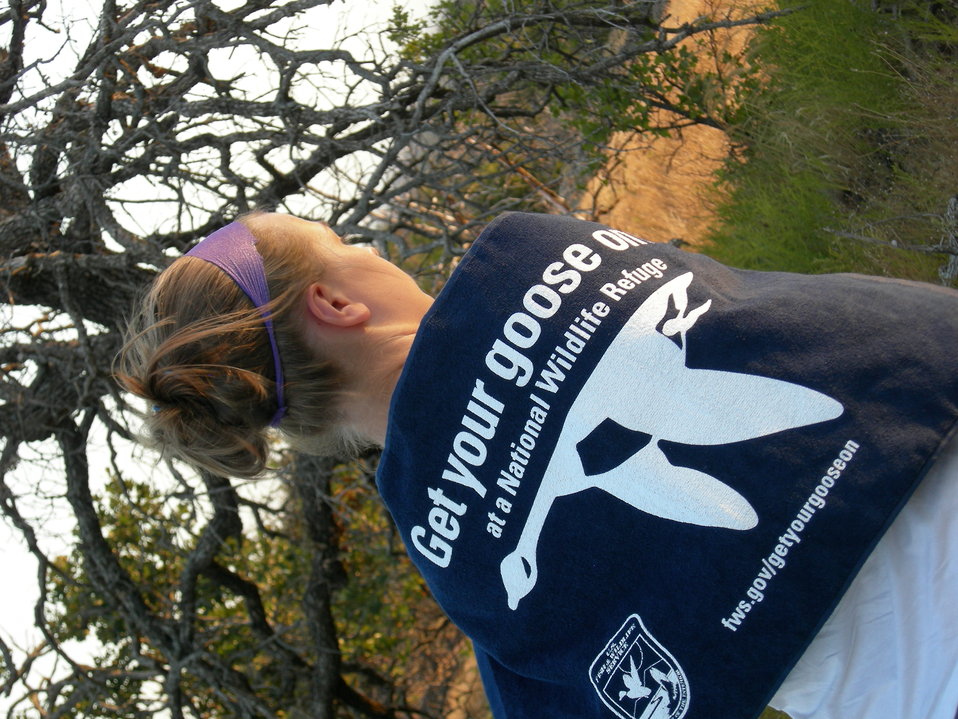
Get Your Goose On!

Wichita Mountains National Wildlife Refuge in Oklahoma.